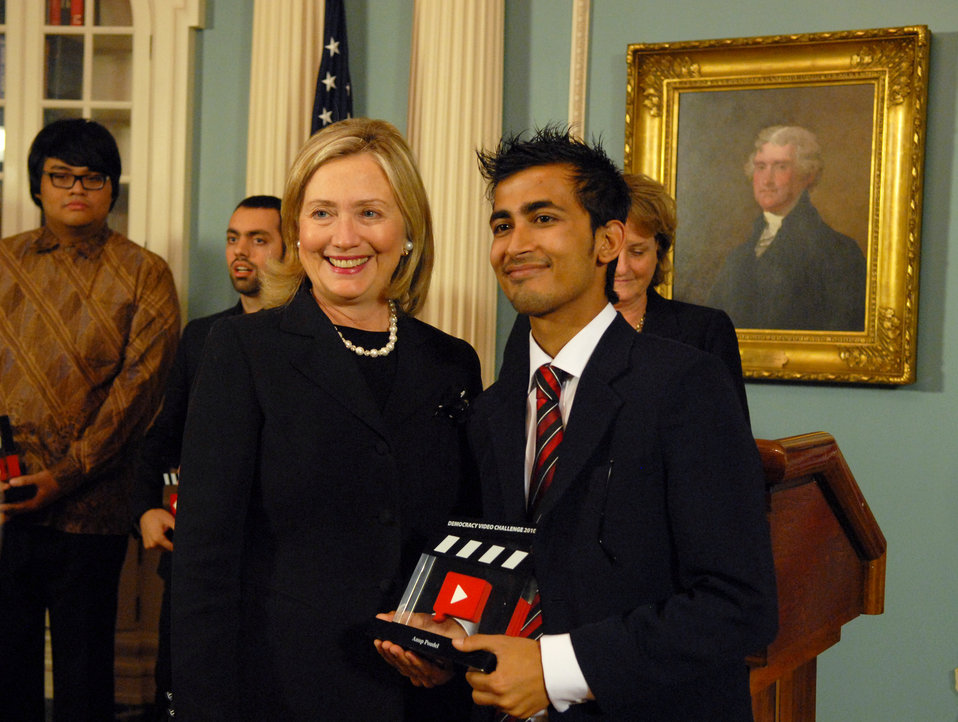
Secretary Clinton Awards Anup Poudel of Nepal the 2010 Democracy Video Challenge Prize

U.S. Secretary of State Hillary Rodham Clinton awards Anup Poudel of Nepal the 2010 Democracy Video Challenge prize at the U.S. Department of State in Washington, D.C., on September 10, 2010.